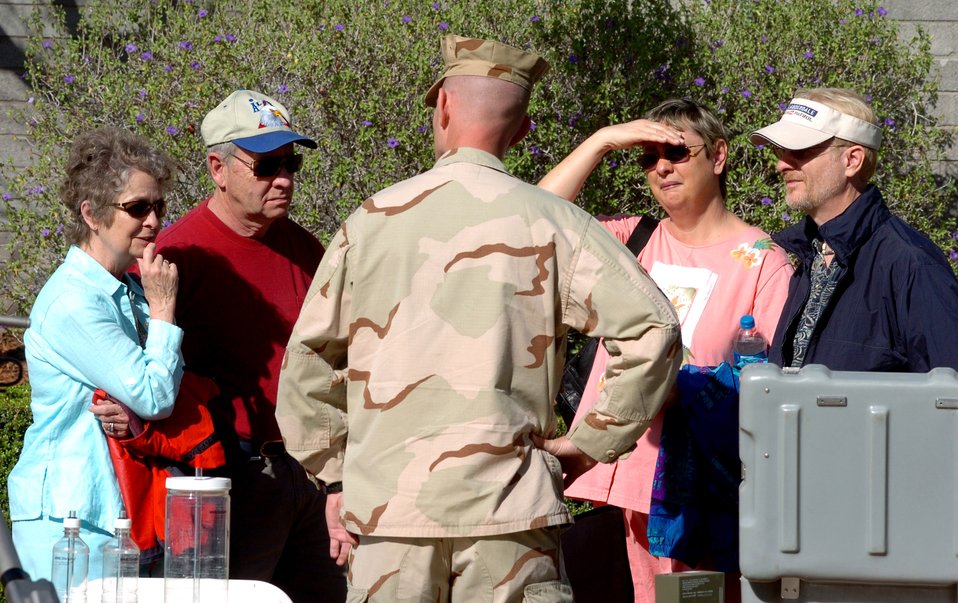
Air Force Week displays highlight airpower

Tech. Sgt. Cary Gibson talks with Air Force Week visitors March 20 about how the 56th Civil Engineer Squadron's Explosive Ordnance Disposal Flight from nearby Luke Air Force Base supports operations Iraqi Freedom and Enduring Freedom. The display was part of Air Force Week activities in Phoenix.